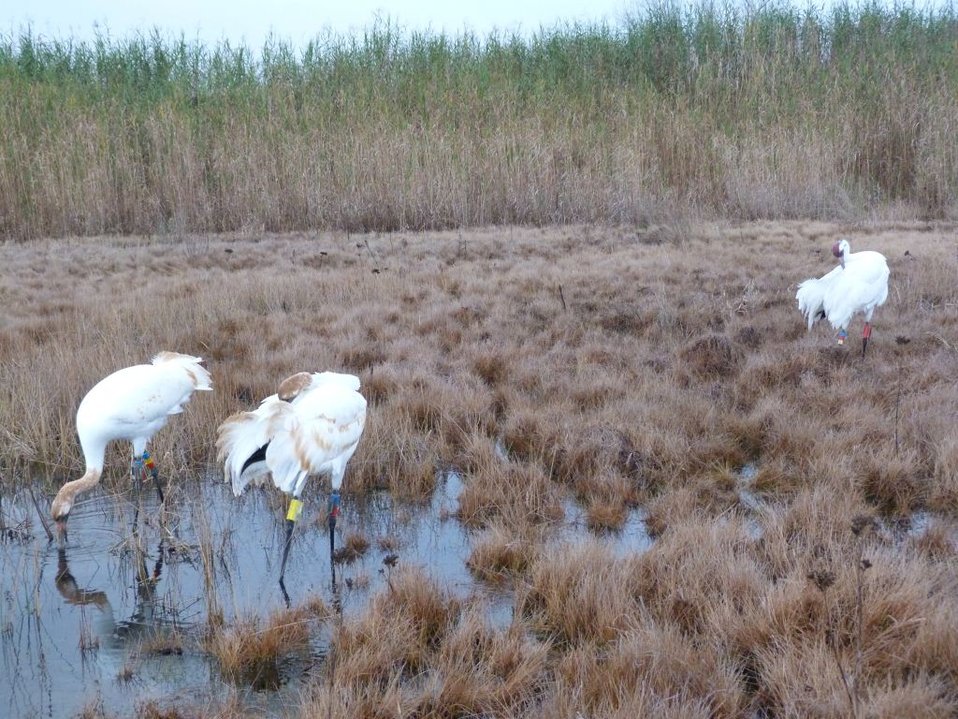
Newly Released Whooping Cranes

L8 & 11-11 with returning bird L4-10, a male from the first group of birds that was released in February 2011.